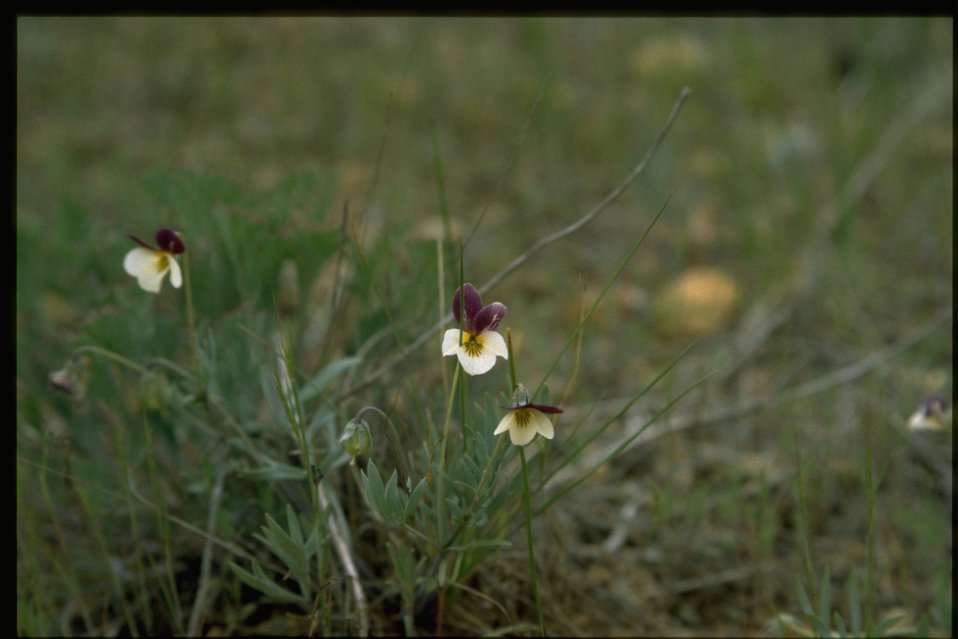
Farshot of Viola hallii.